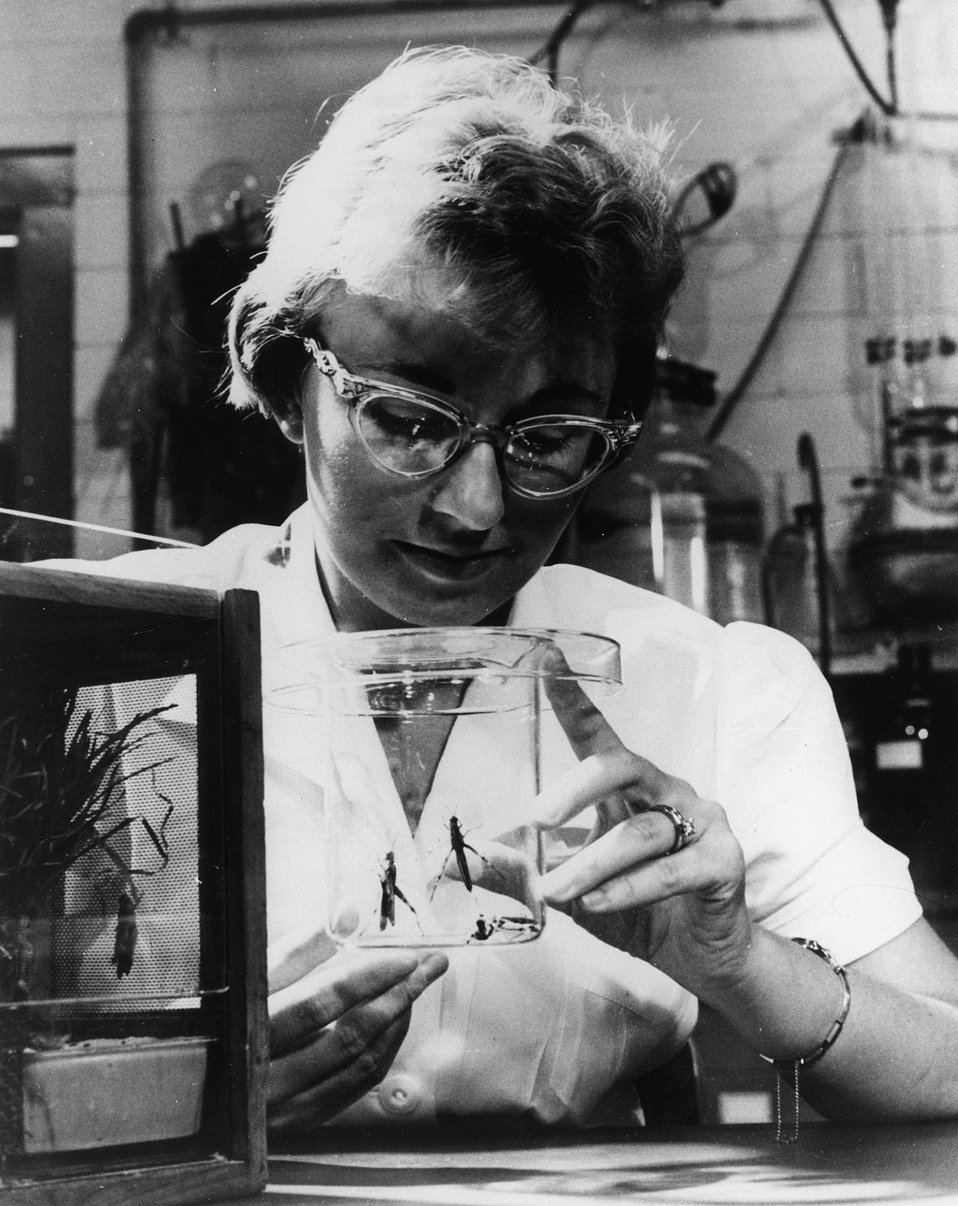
A continuing study of ionizing radiation effects on living cells is carried out at Oak Ridge National Laboratory's Biology Division. c. 1965